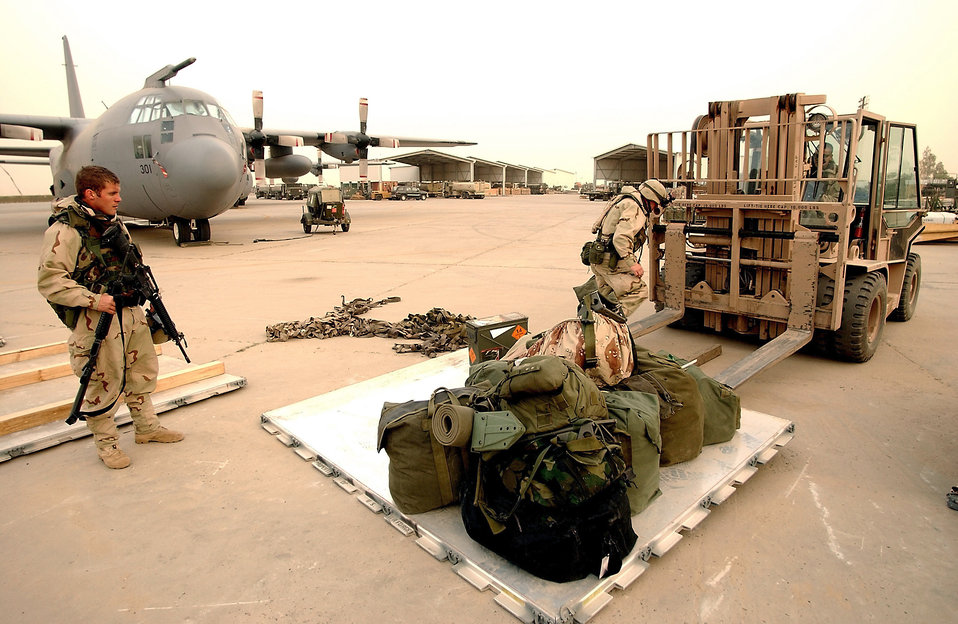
Pallet building

OPERATION IRAQI FREEDOM -- Members of the 821st Tanker Airlift Control Element load their personal bags onto a pallet for shipment to a deployed location, March 27, 2003. The 821st TALCE is forward deploying in support of Operation Iraqi Freedom.